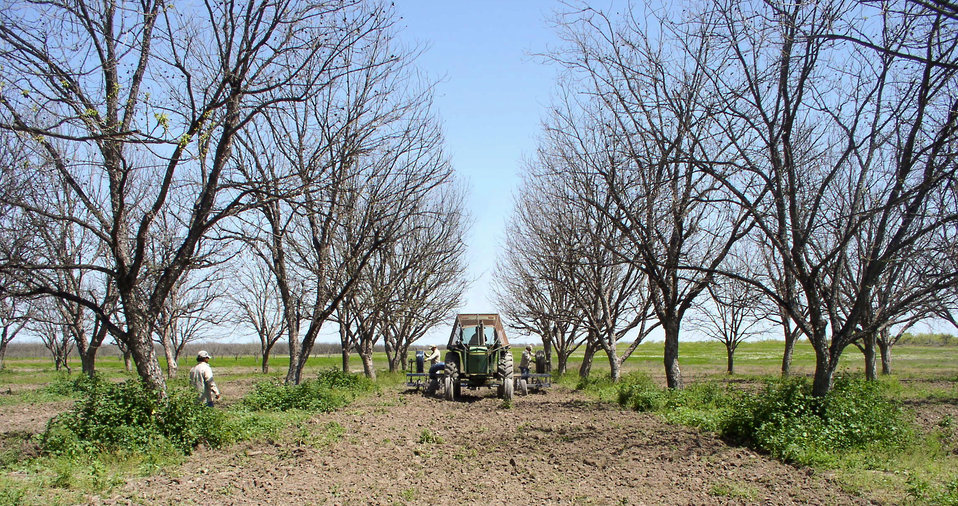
An Arrowhead Farms tractor pulls a contractor's specialized equipment that digs twin furrows 10 inches deep and buries a drip irrigation tube between rows of pecan trees, during the installation of a micro irrigation system at Arrowhead Farms in Crystal City, TX, on
Tuesday, March 29, 2010. Up until now, flood irrigation has been used and it results in a high degree of weed growth throughout the grounds. Underground irrigation will starve the topsoil and dramatically retard weed growth and the need for labor and cost of herbicides. In all, about 25,000 feet of drip tubing was used. The 719-acre farm with 10,000 trees, features some orchards with underground micro irrigation system that feeds water to the roots of 4,380 pecan trees on 146 acres. Mr. Mohammad said, “USDA (U.S. Department of Agriculture) was essential to my business and trees surviving the recent exceptional drought. The trees were stress free thanks to underground micro-irrigation. This is essential to the future growth of Texas agriculture and good for America.” U.S. Department of Agriculture’s (USDA) Environmental Quality Initiative Program (EQIP) awarded Mr. Mohammad a $130,000 grant in 2008. He provided $26,000 for the balance of the $156,000 total cost to install a 146-acre underground micro-irrigation for 4,380 trees.